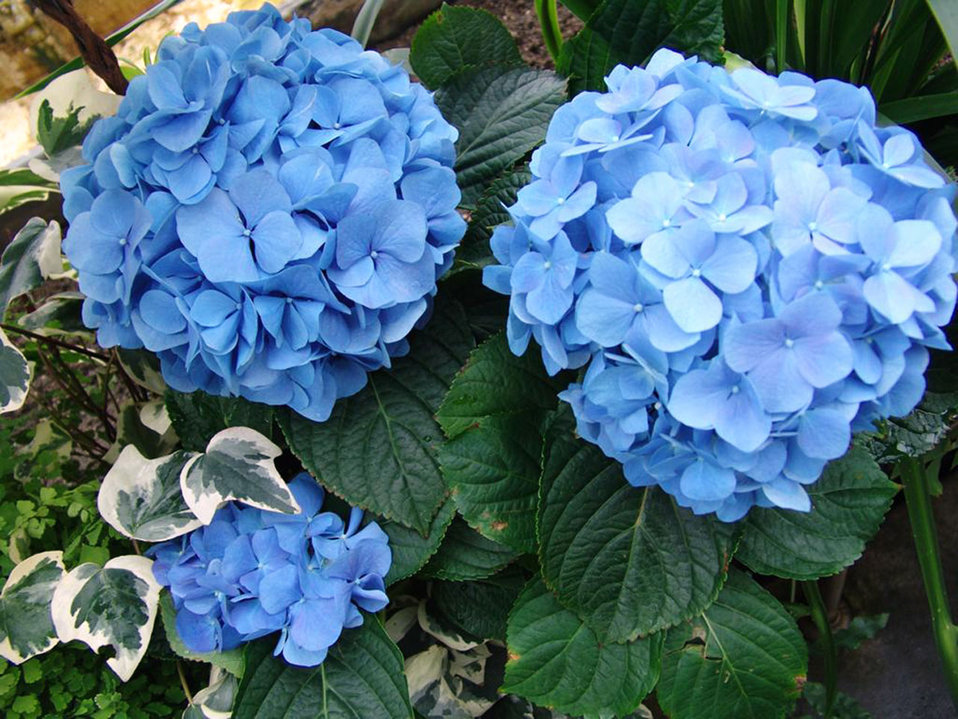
Hydrangea

Blue hydrangea.